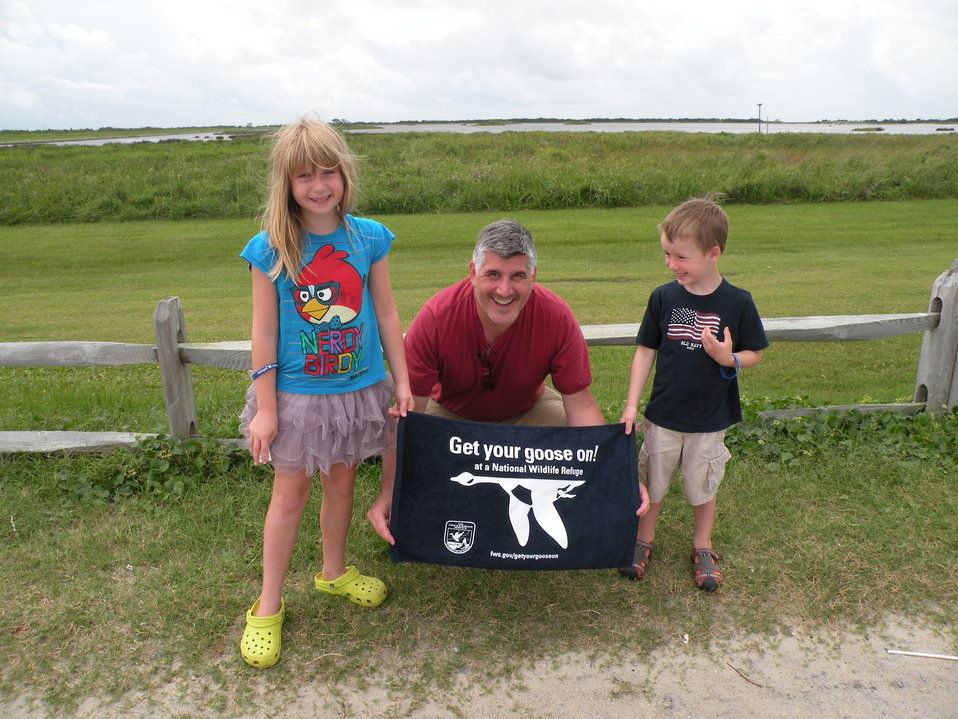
Get Your Goose On!

Visitors at PINWR enjoying the refuge stop to Get Their Goose On!

Ashlyn Knight/USFWS